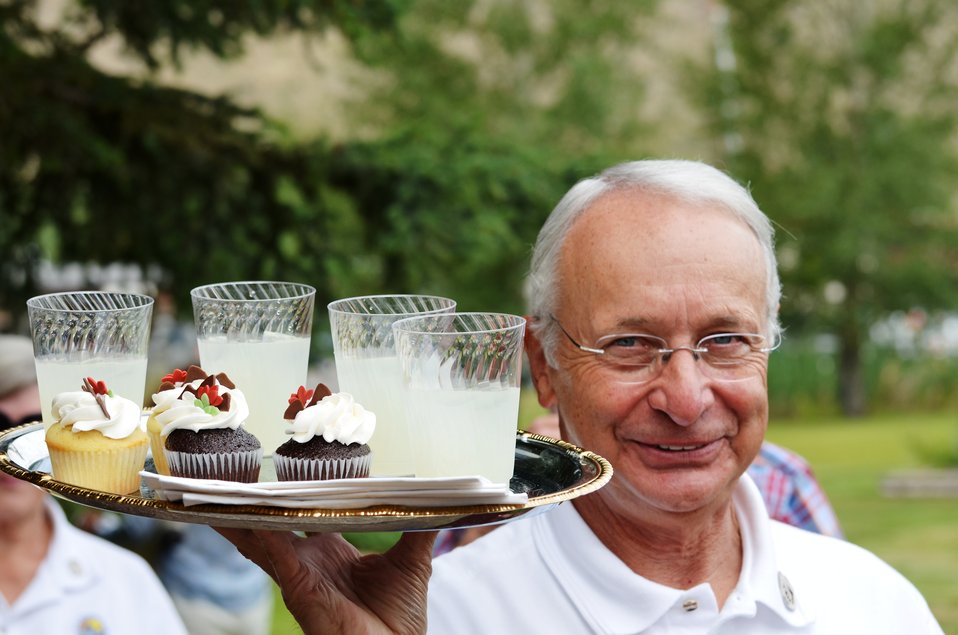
Missed His Calling

National Elk Refuge volunteer Steve Miller, who served as a school administrator before retiring, realized he may have missed his calling as a waiter as he served cupcakes and lemonade after the National Elk Refuge's centennial ceremony.

Credit: USFWS / Bobby Harkey, National Elk Refuge volunteer